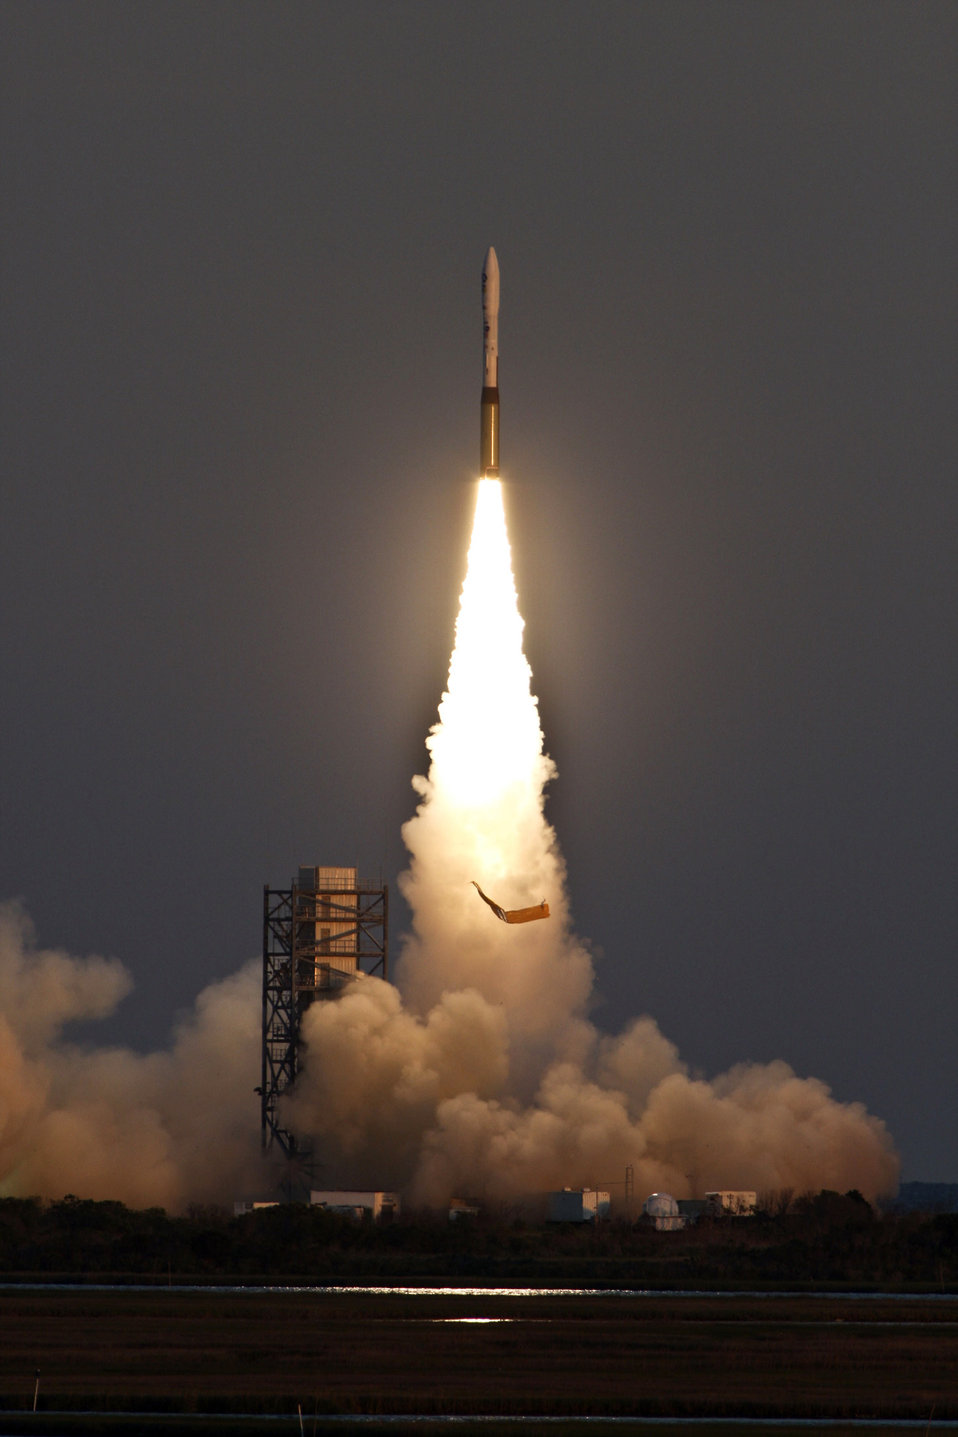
Team helps put tactical satellite in orbit

An Air Force Minotaur I rocket launches into orbirt carrying the Air Force Research Laboratory's TacSat-3 satellite, NASA's PharmaSat microsatellite and NASA's CubeSat Technology Demonstration May 19 from Wallops Flight Facility, Va.